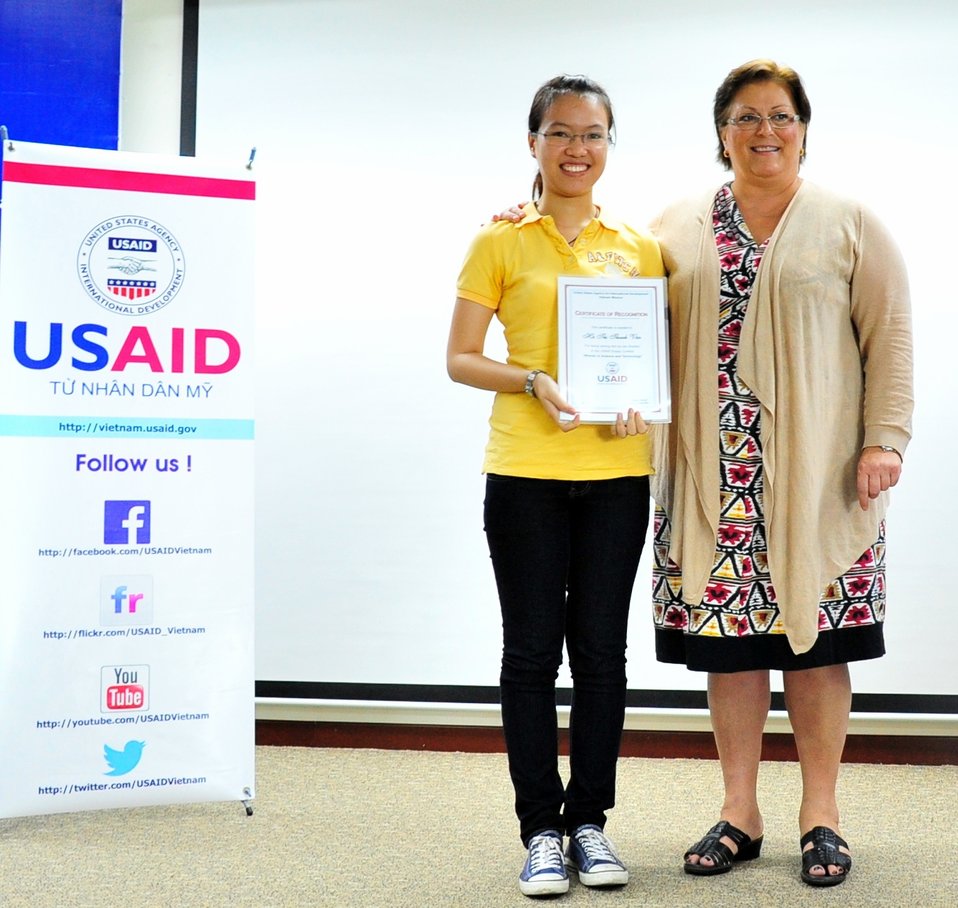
Women in Science and Technology Essay Contest Award Ceremony

U.S. Embassy Deputy Chief of Mission Claire Pierangelo presents a certificate of recognition to Ms. Ha Thi Thanh Van, a student from Vietnam Institute of Aviation, who is among top 10 finalists in the USAID Women in Science and Technology Essay contest, on May 16, 2013.